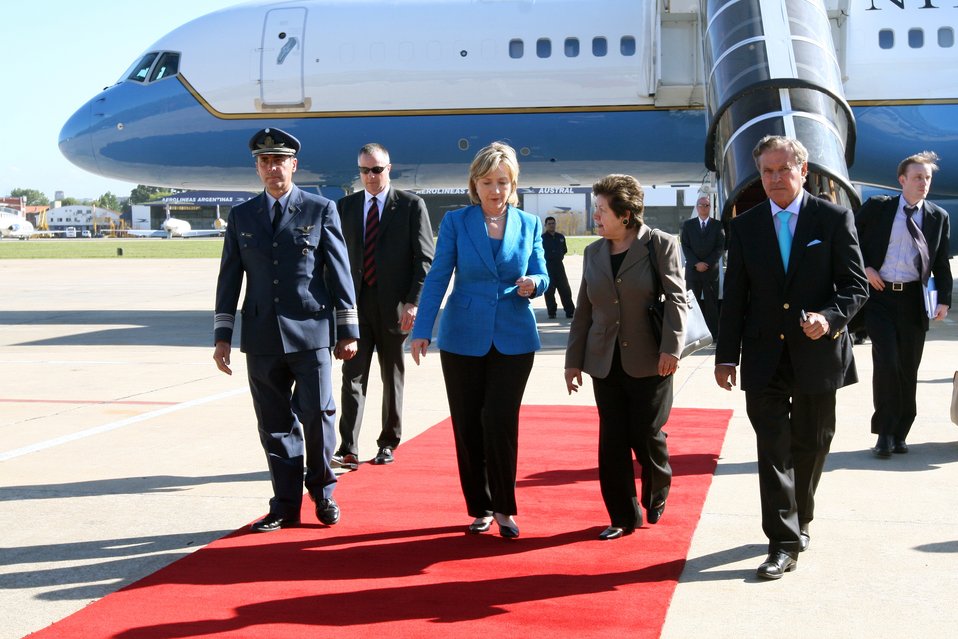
Secretary Clinton Wheels Down in Buenos Aires, Argentina

U.S. Secretary of State Hillary Rodham Clinton 'wheels down' in Buenos Aires, Argentina March 1, 2010.